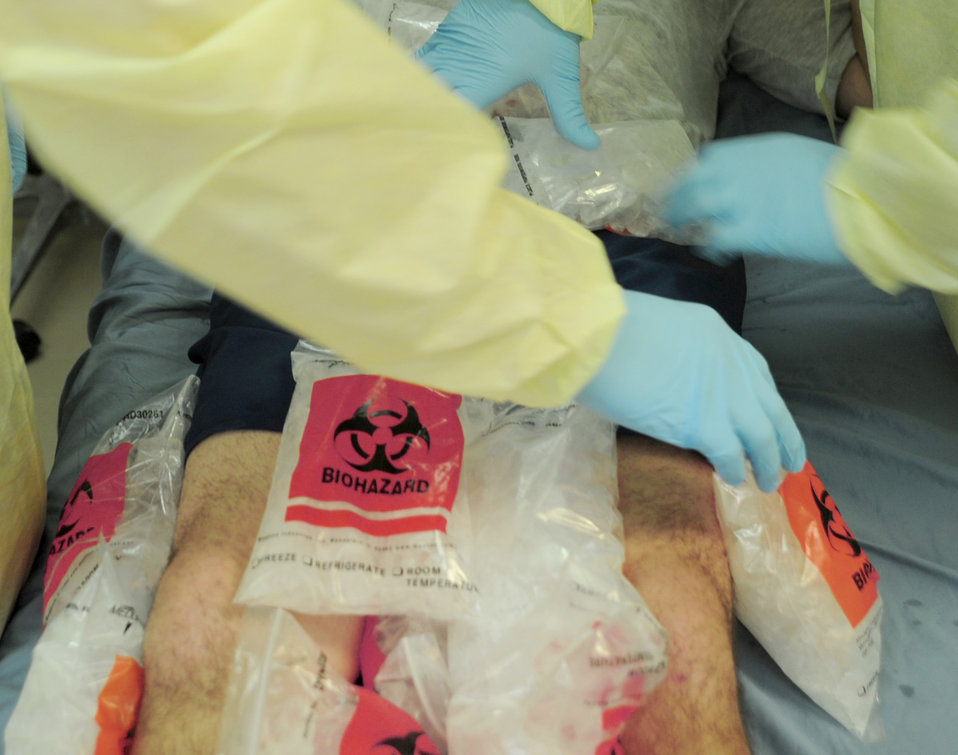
Medical team saves life with 'cool' procedure

A medical team from the 332nd Expeditionary Medical Group at Joint Base Balad, Iraq, demonstrates using ice packs to decrease a patient's body temperature during a hypothermic resuscitation procedure. This procedure was the first of a kind for all technicians involved.